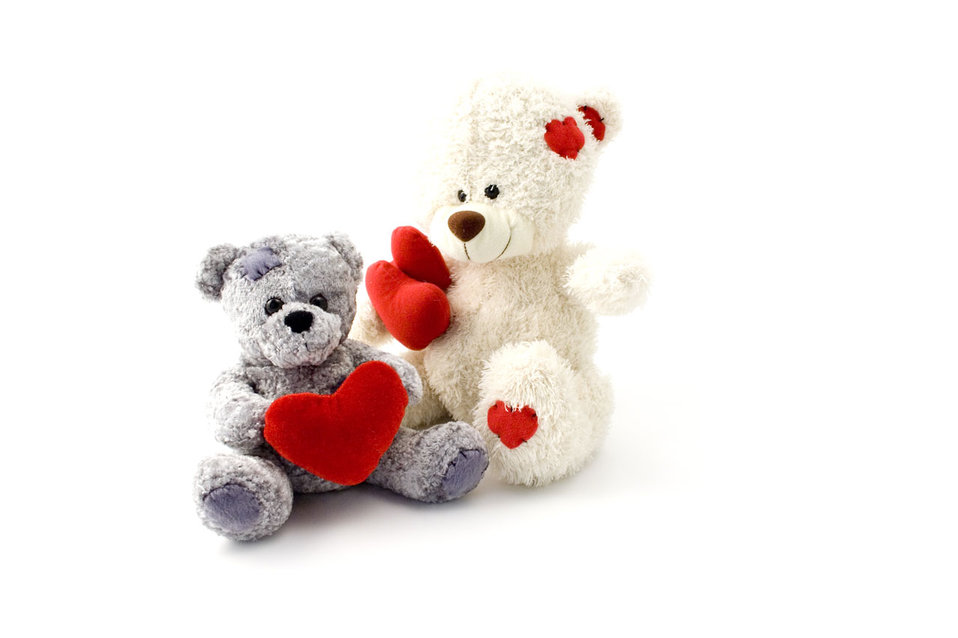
Teddy bears

Two fluffy teddy bears on white background.